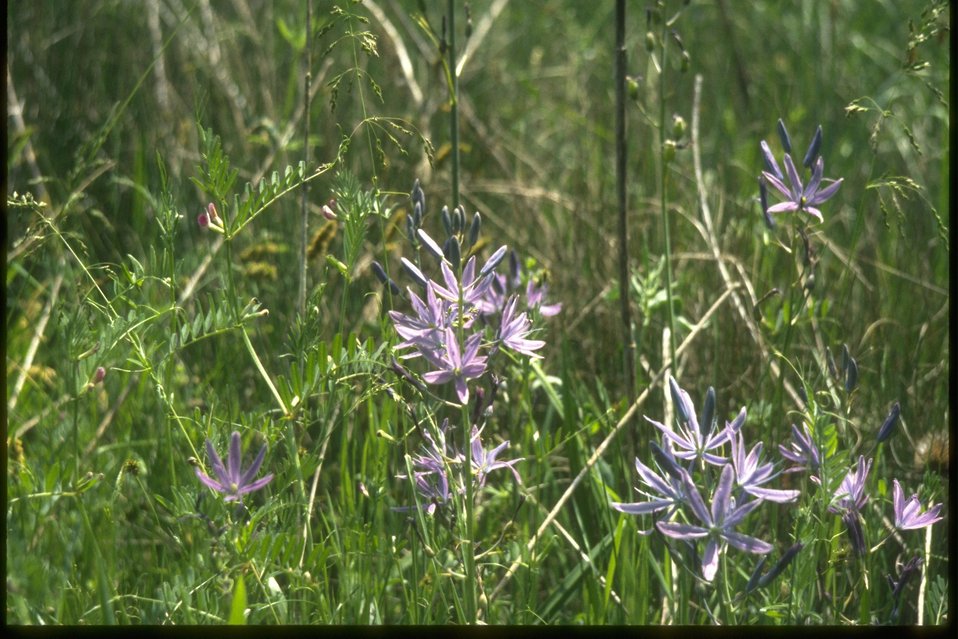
Camas at West Eugene Wetlands.